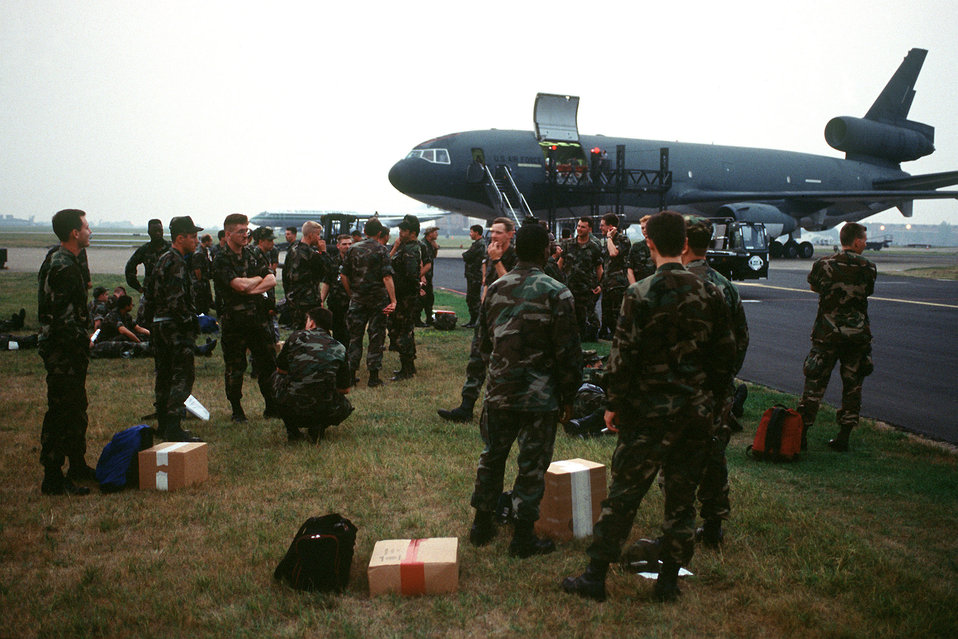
Members of the 48th TFW wait to board a KC-10A

1990's -- Members of the 48th Tactical Fighter Wing wait to board a KC-10A Extender aircraft. The 48th TFW is deploying to Saudi Aircraft for Operation Desert Shield.